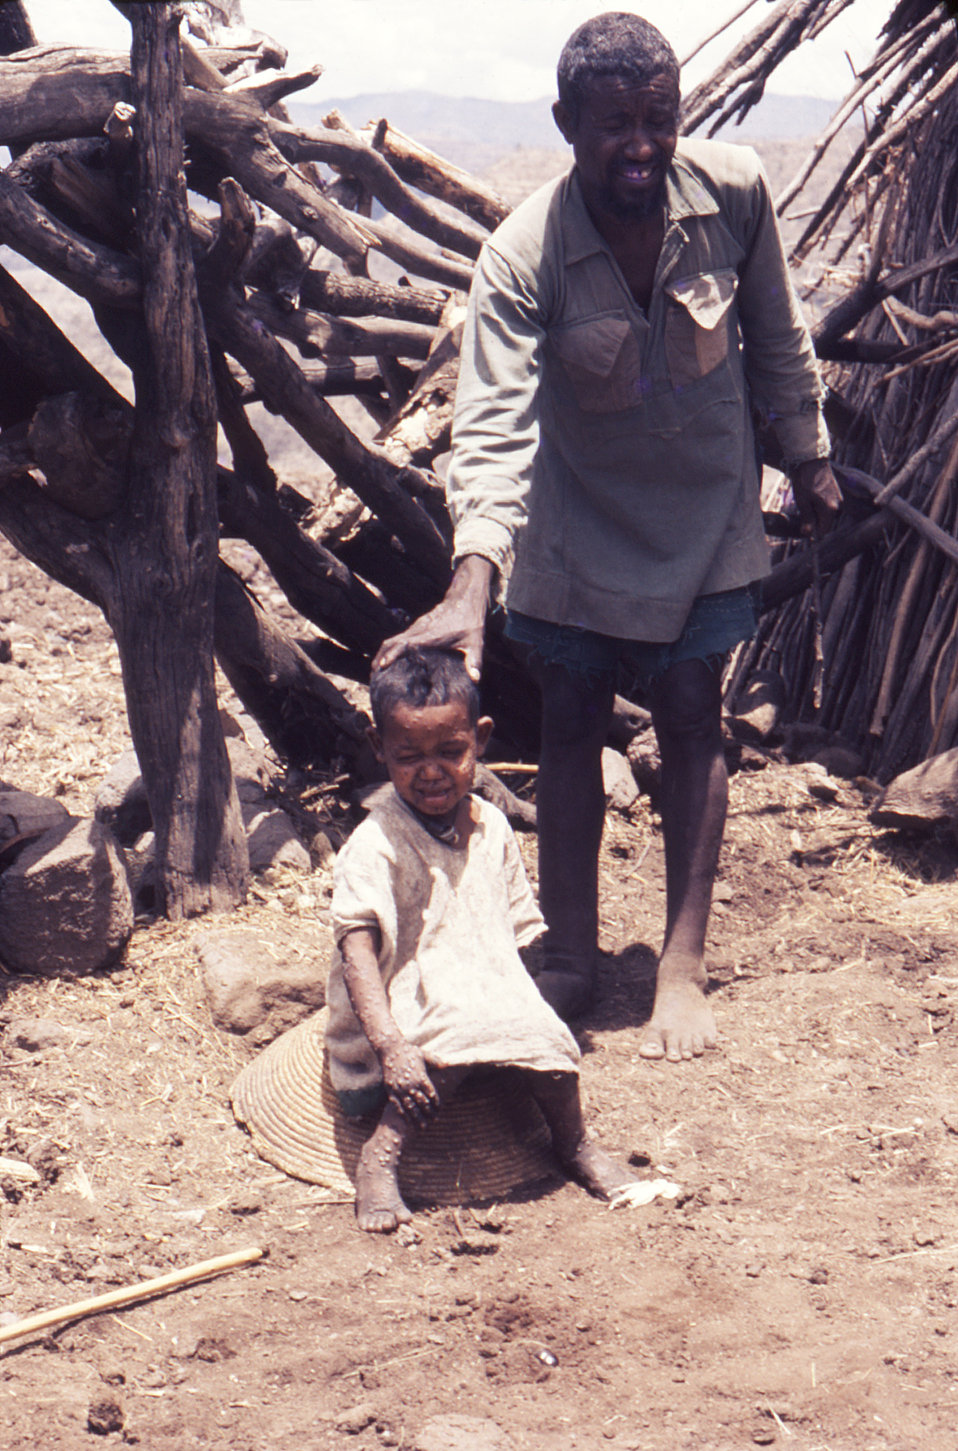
Overlooking the Blue Nile river gorge, this 1976 photograph depicted an adult male posed with a seated child. The child had contracted smallpox, and was displaying the characteristic maculopapular rash, which at the time of this image, was one week in duration.